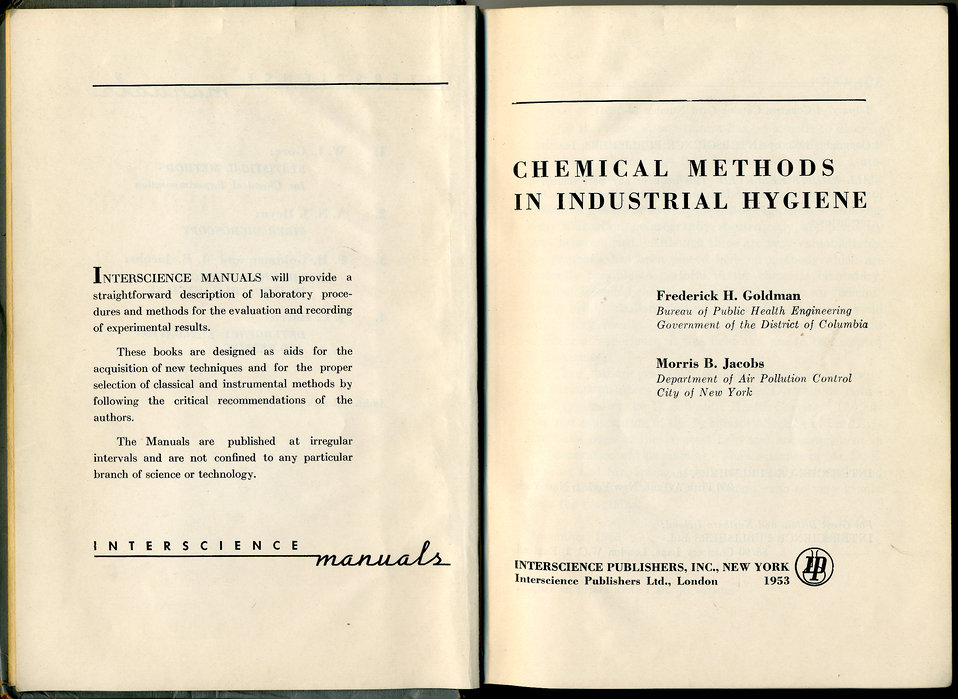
This photograph, provided by the Center for Disease Control's (CDC), National Institute for Occupational Safety and Health (NIOSH), depicted the title page of a 1953 laboratory manual entitled, 'Chemical Methods in Industrial Hygiene', by Drs. F. H. Goldman and M. B. Jacobs. It was in Dr. Goldman's laboratory in which PHIL images 9753, 9754, 9755, 9762, 9763, 9764, 9765, 9766, 9767, 9768, 9769, 9770, 9771, 9772, and 9773, were captured.